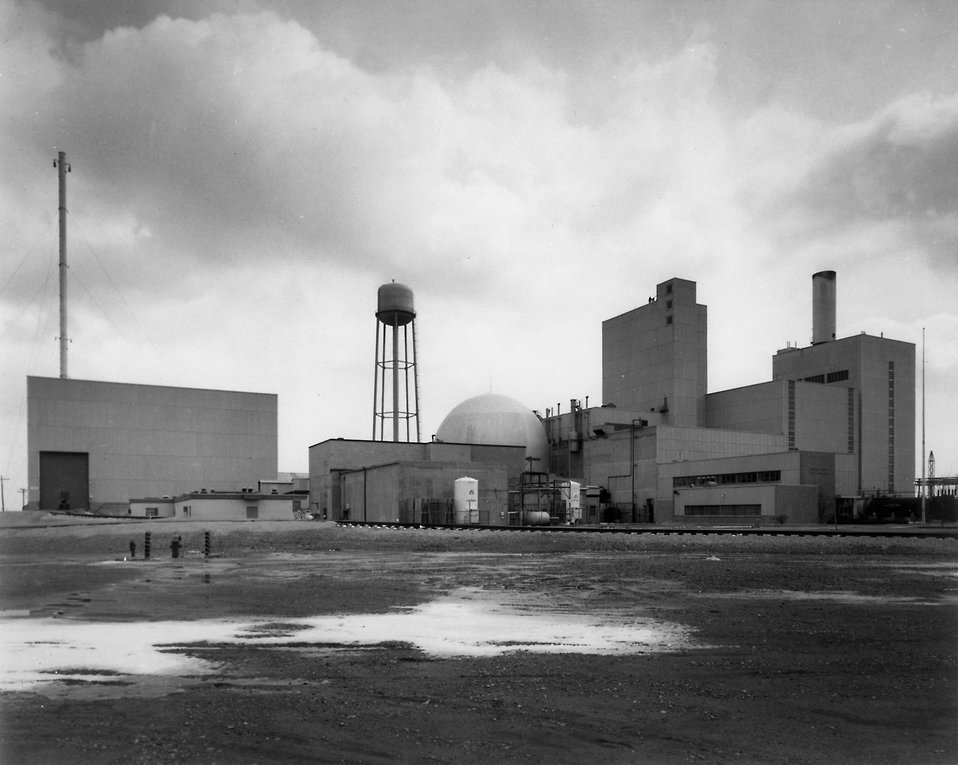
Enrico Fermi Atomic Power Plant, located at Lagoona Beach on Lake Erie, near Monroe, Michigan, about 35 miles southwest of Detroit. Circa 1972.